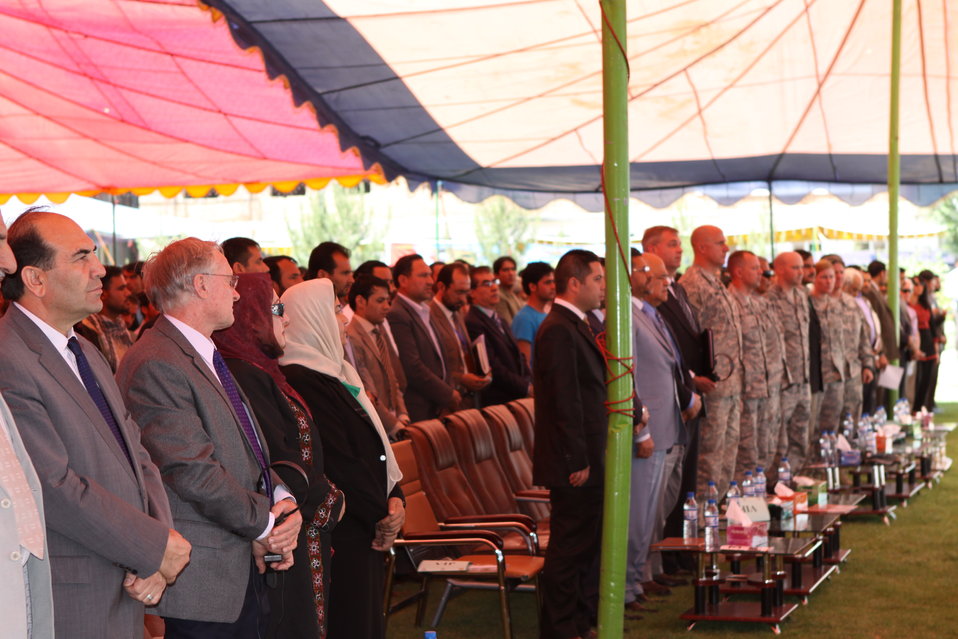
100522 ATVI Graduation 050